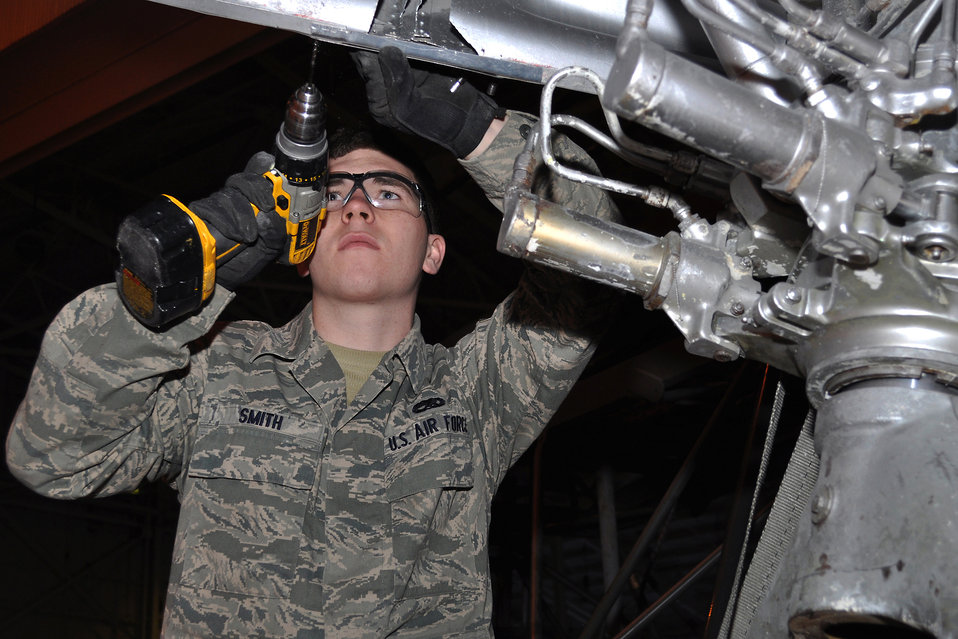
Aircraft Restoration

Airman 1st Class Steven Smith repairs part of the exterior body of a C-118 Liftmaster March 4, 2011, that is being restored by active-duty and Reserve Airmen and civilians at Joint Base McGuire-Dix-Lakehurst, N.J. Airman Smith is with the 305th Maintenance Squadron. Liftmasters were the first cargo airplanes stationed at JB McGuire and helped the base to define its role as an air mobility gateway. When the restoration is finished, the aircraft will be displayed near the base’s passenger terminal.